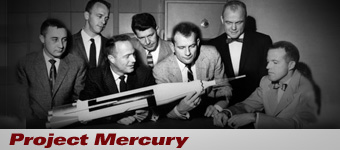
Col. Regina Aune history spotlight graphic .